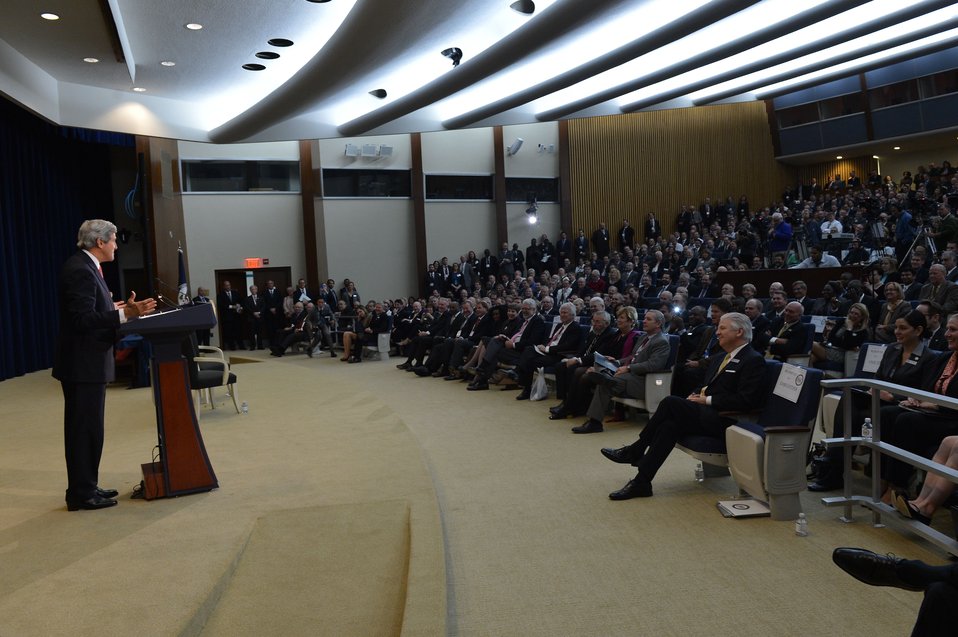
Secretary Kerry Delivers Remarks at the Overseas Security Advisory Council's 28th Annual Briefing

U.S. Secretary of State John Kerry delivers remarks at the Overseas Security Advisory Council’s 28th Annual Briefing at the U.S. Department of State in Washington, D.C., on November 20, 2013.